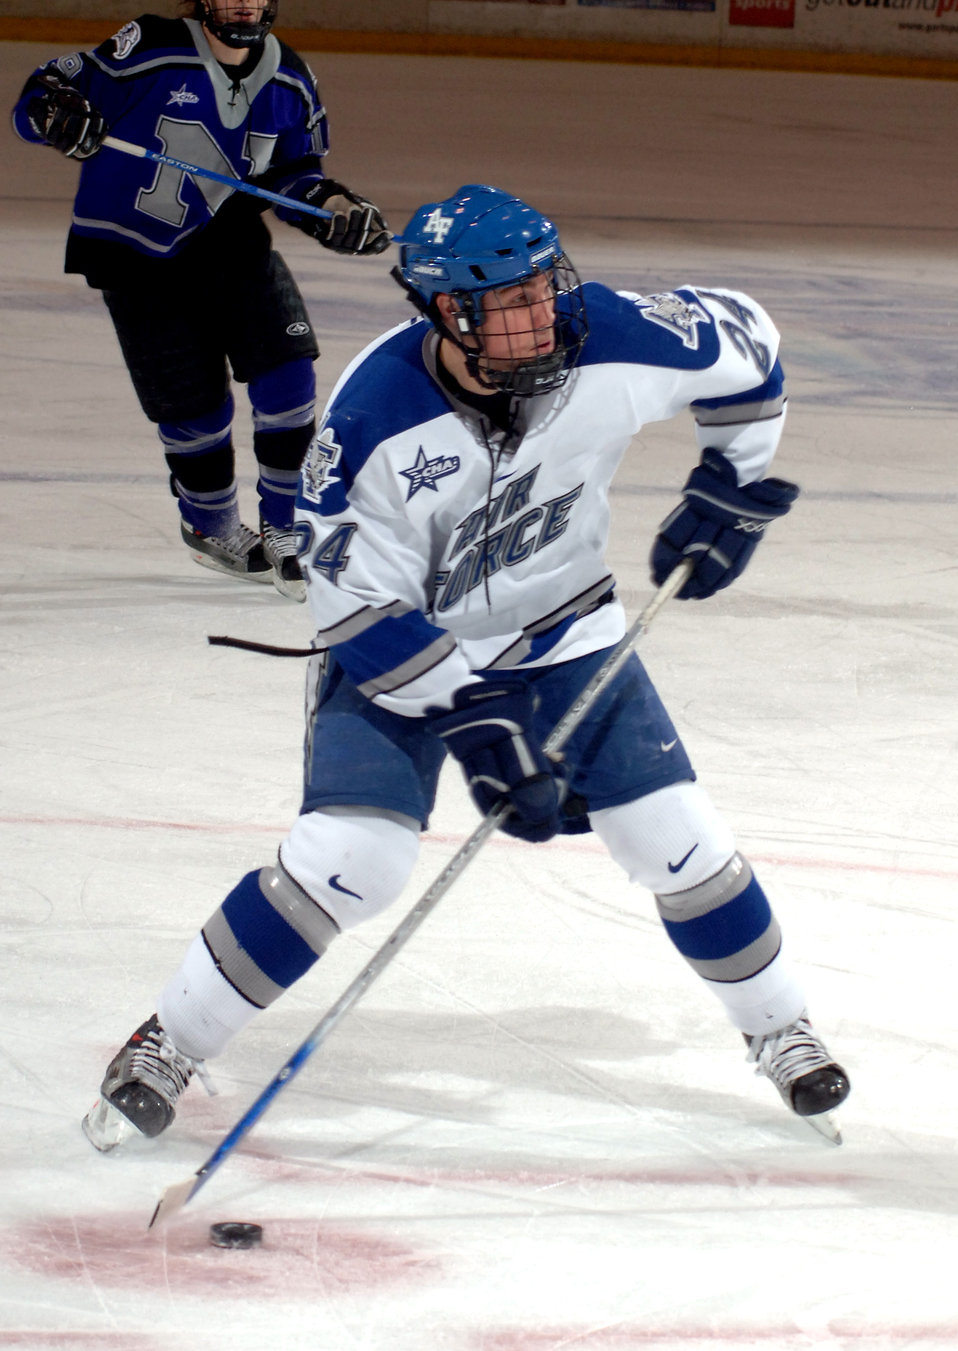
Something amazing

Air Force junior center Eric Ehn is the Atlantic Hockey Association offensive player of the week for his performance in two games, Oct. 6-8.